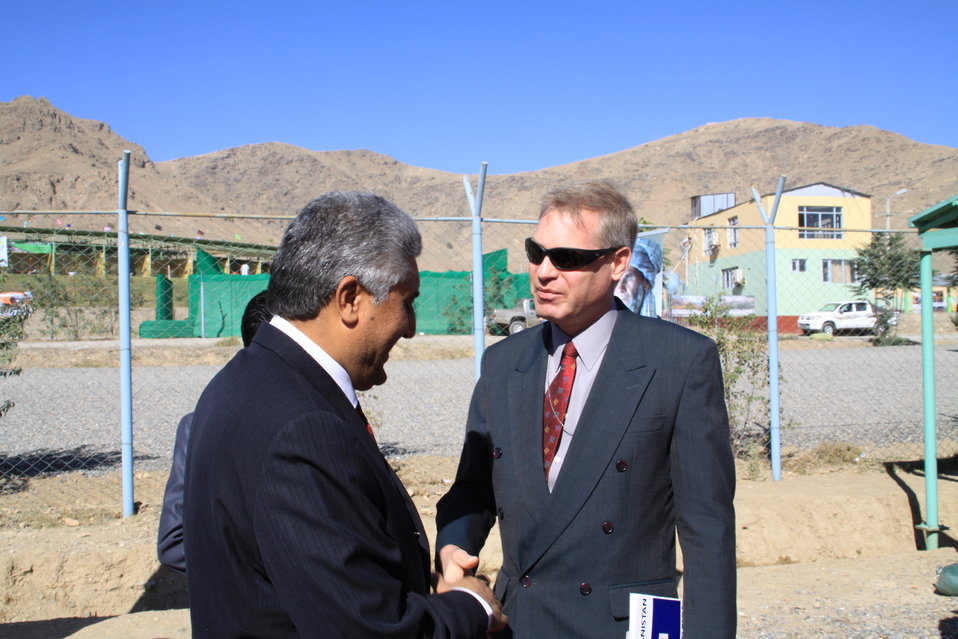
AVIPA Plus Wheat Seed Distribution 101005

US Ambassador Karl Eikenberry and USAID Acting Mission Director Kevin Brownawell joined the Minister of Agriculture, Irrigation and Livestock, H.E. Minister Mohammed Rahimi in signing a Memorandum of Understanding and distributing vouchers to area farmers for wheat and fertilizer.